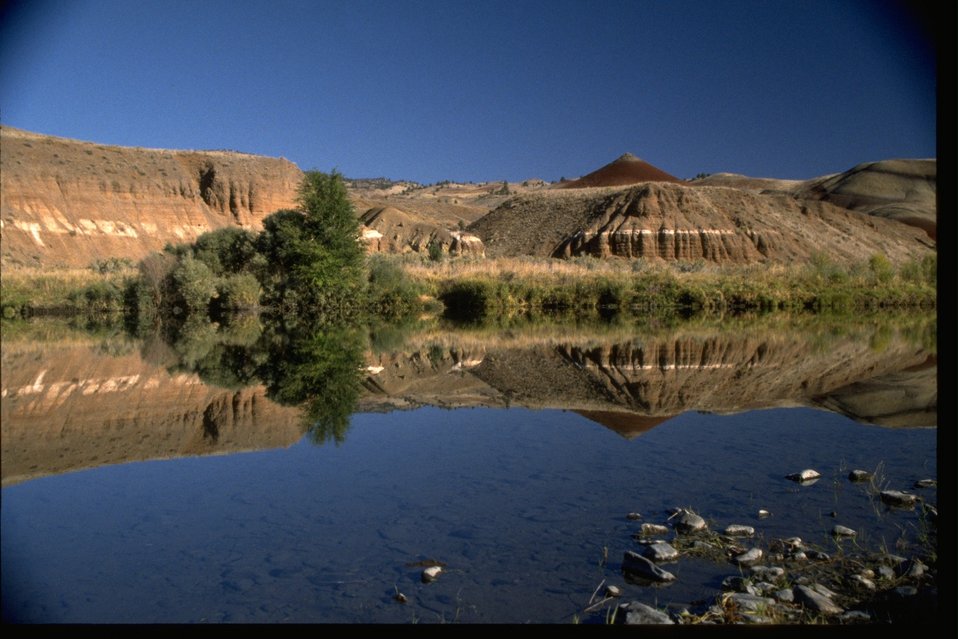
Riparian vegetation along the bank of the John Day River, near Bridge Creek.